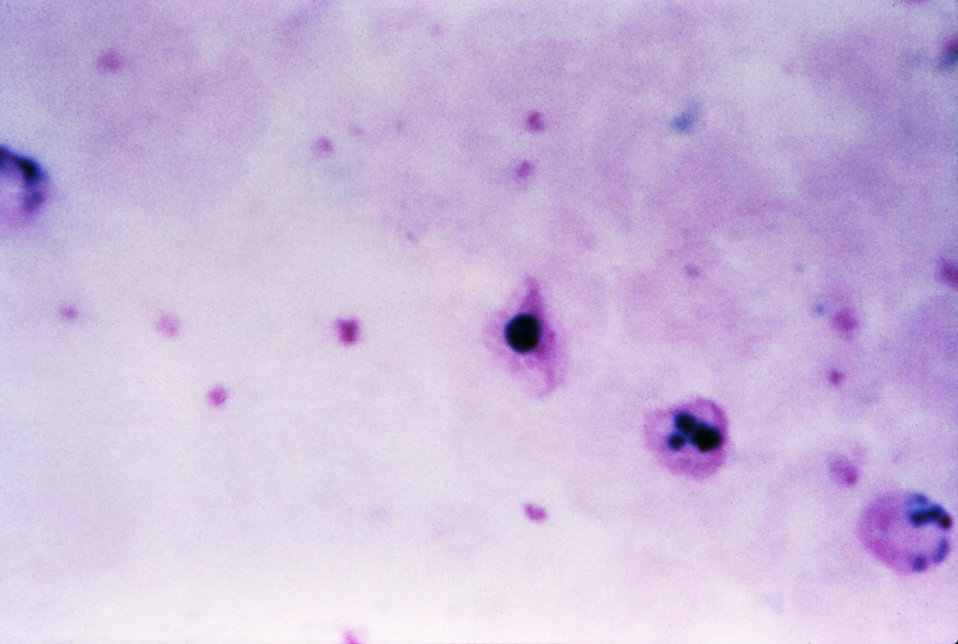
This thick film Giemsa stained micrograph reveals a mature, and an amoeboid Plasmodium vivax trophozoite.